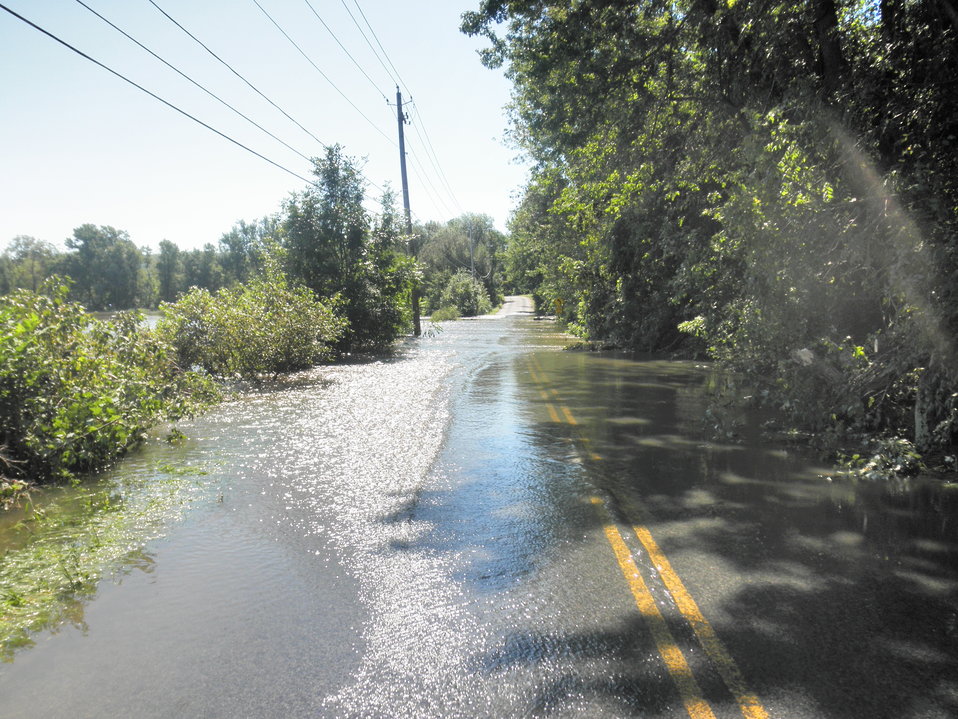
Hurricane Damage at Wallkill River National Wildlife Refuge August 30, 2011

Flooding on Oil City Road, Sussex, NJ.